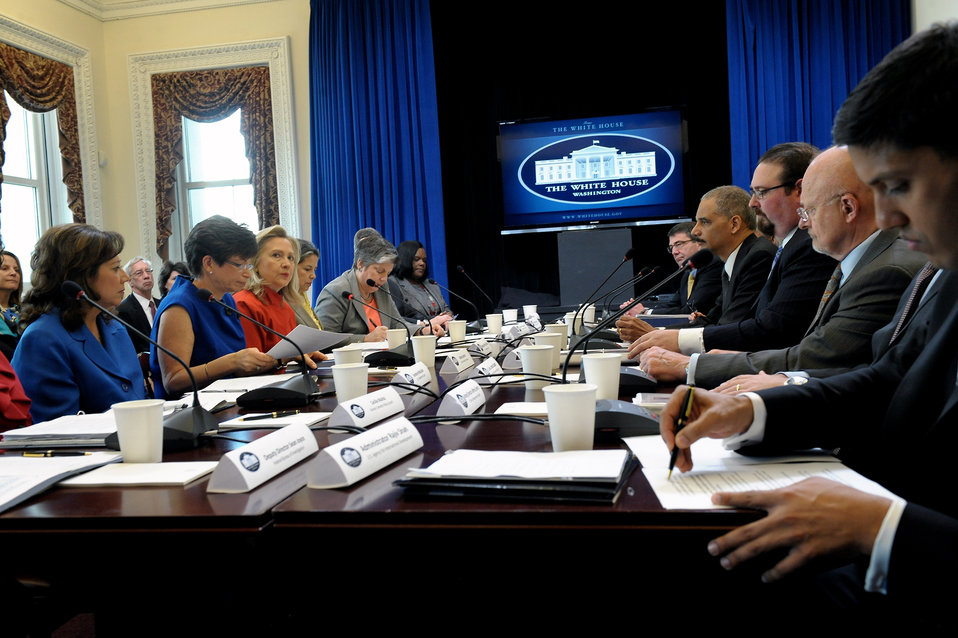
Secretary Clinton Chairs the Interagency Task Force to Monitor and Combat Trafficking in Person

U.S. Secretary of State Hillary Rodham Clinton chairs the President’s Interagency Task Force to Monitor and Combat Trafficking in Persons in Washington, D.C. on March 15, 2012.